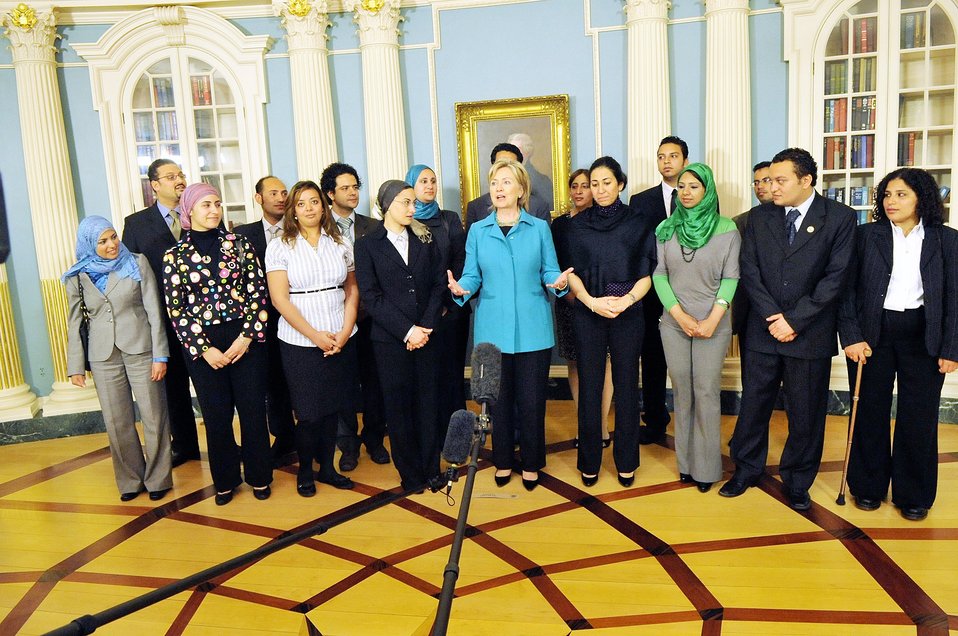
Secretary Clinton Meets With Visiting Egyptian Democracy Activists

U.S. Secretary of State Hillary Rodham Clinton provides remarks with visiting Egyptian democracy activists at the U.S. Department of State in Washington, DC May 28, 2009.